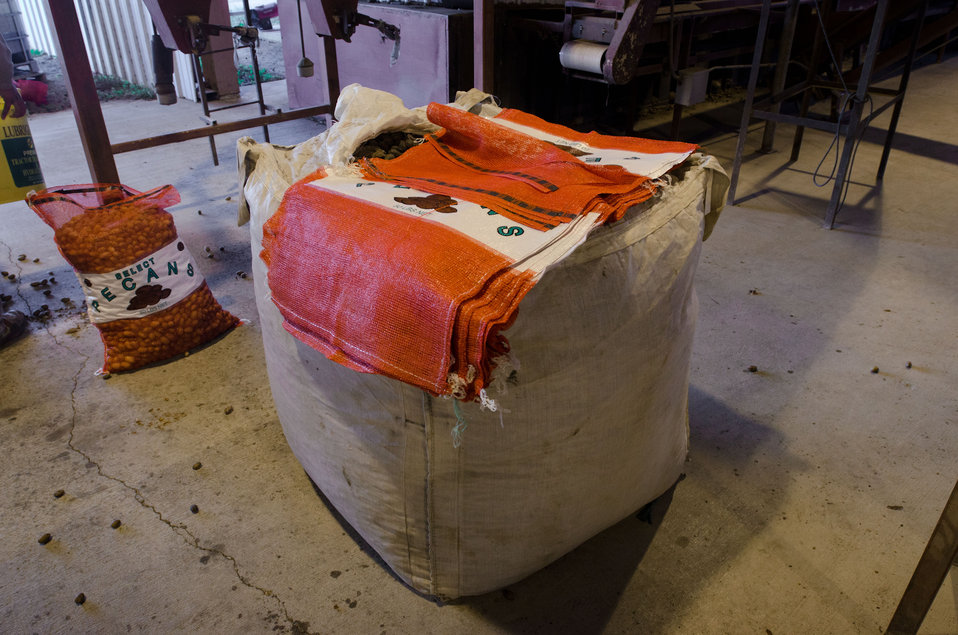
Orange and white 50-pound pecan sacks and a white 1,500 pound 'super sack' at the bagging station of Arrowhead Farms of Crystal City, TX, on Friday, December 9, 2011, owned by Mr. Akram Mohammad, a pecan farmer since 2005. The 719 acre farm with 10,000 trees, features some orchards with underground micro irrigation system that feeds water to the roots of 4,380 pecan trees on 146 acres. Mr. Mohammad said, “USDA (U.S. Department of Agriculture) was essential to my business and trees surviving the recent exceptional drought. The trees were stress free thanks to underground micro-irrigation. This is essential to the future growth of Texas agriculture and good for America.” U.S. Department of Agriculture’s (USDA) Environmental Quality Initiative Program (EQIP) awarded Mr. Mohammad a $130,000 grant in 2008. He provided $26,000 for the balance of the $156,000 total cost to install a 146-acre underground micro-irrigation for 4,380 trees.